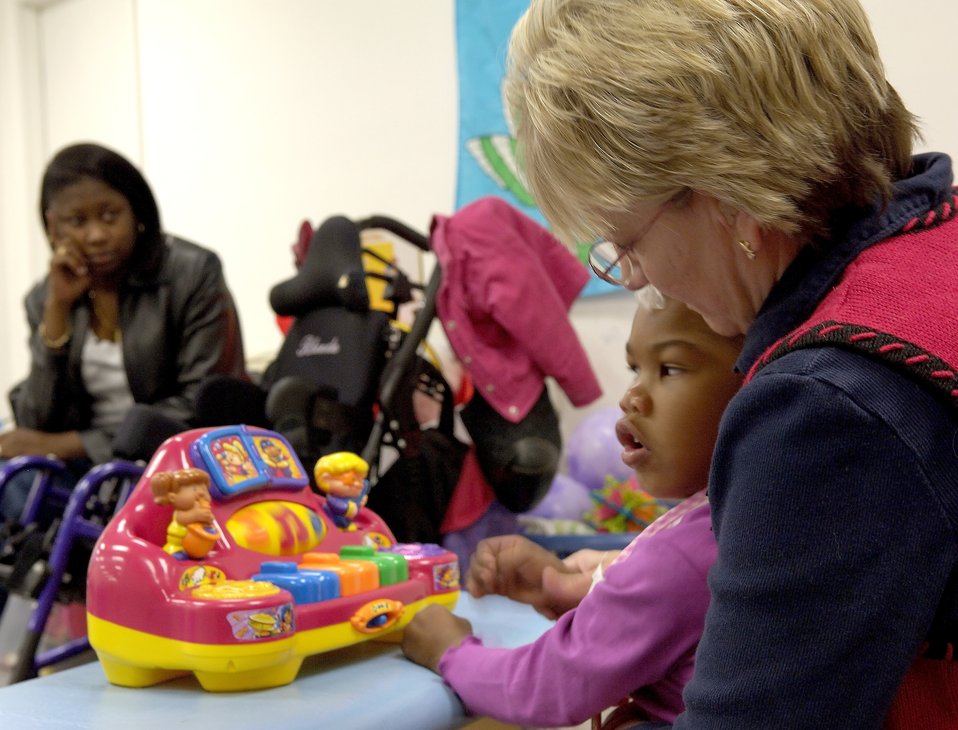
Hayes family

SAVANNAH, Ga., (AFPN) -- Diane Hayes looks on as Beverly Kelly, a physical therapist, helps Kiera Hayes with physical and speech therapy here. The Hayes family was forced to evacuate Keesler Air Force Base, Miss., a day before hurricane Katrina hit the gulf coast. Mrs. Hayes, her son, Kion, and daughter, Kiera, moved in with her parents here while her husband was stationed at Kunsan Air Base, South Korea.